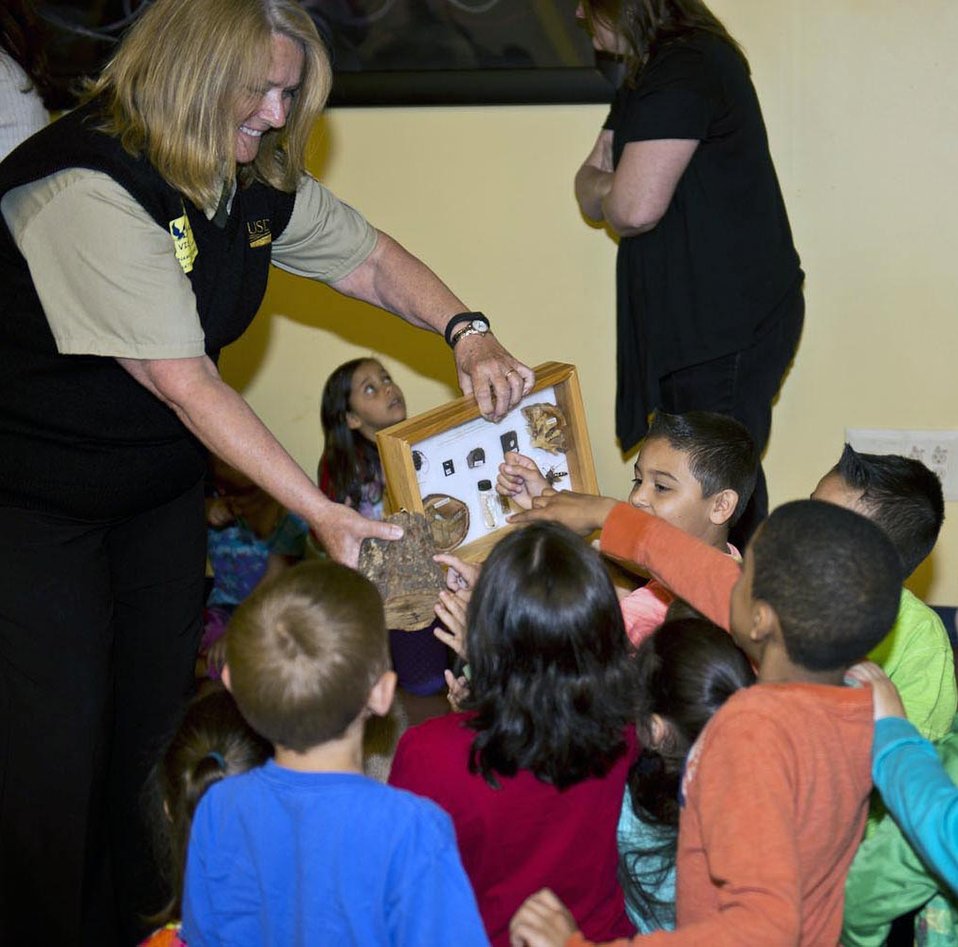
South Bay Elementary School students look at samples of Asian Longhorned Beetles (ALB) in West Babylon, NY on Friday, May 23, 2014. The U.S. Department of Agriculture (USDA) Animal and Plant Health Inspection Service (APHIS) New York ALB Eradication Program staff told the story of the ALB using gestures and movements to get students engaged and informed about how they can check trees for the beetles this summer.